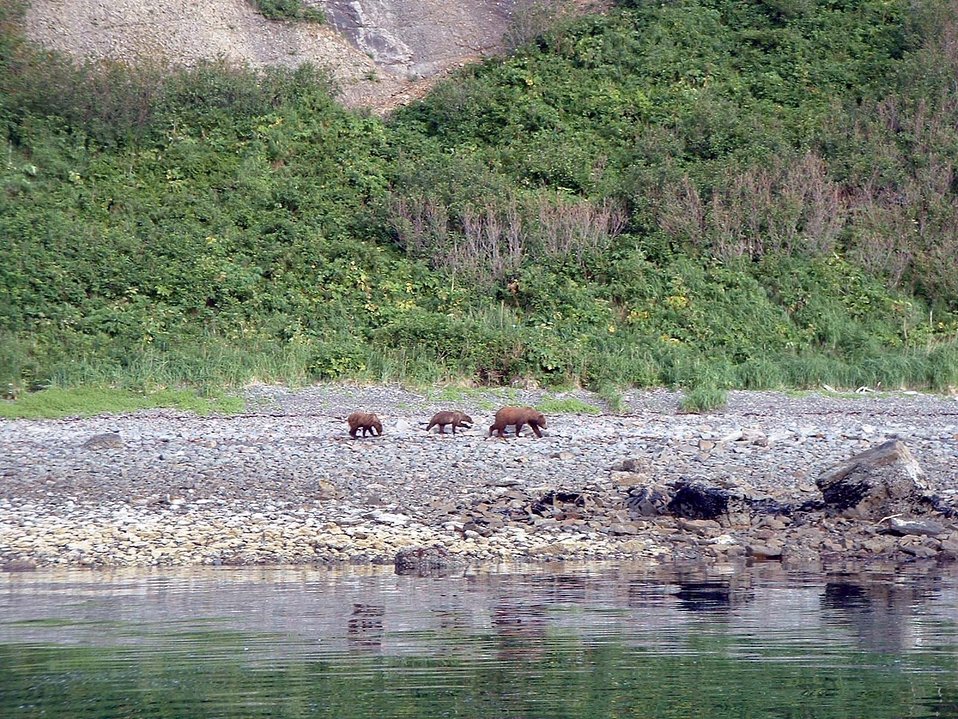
Mama bear with two cubs - Alaska brown bears - Ursus arctos.